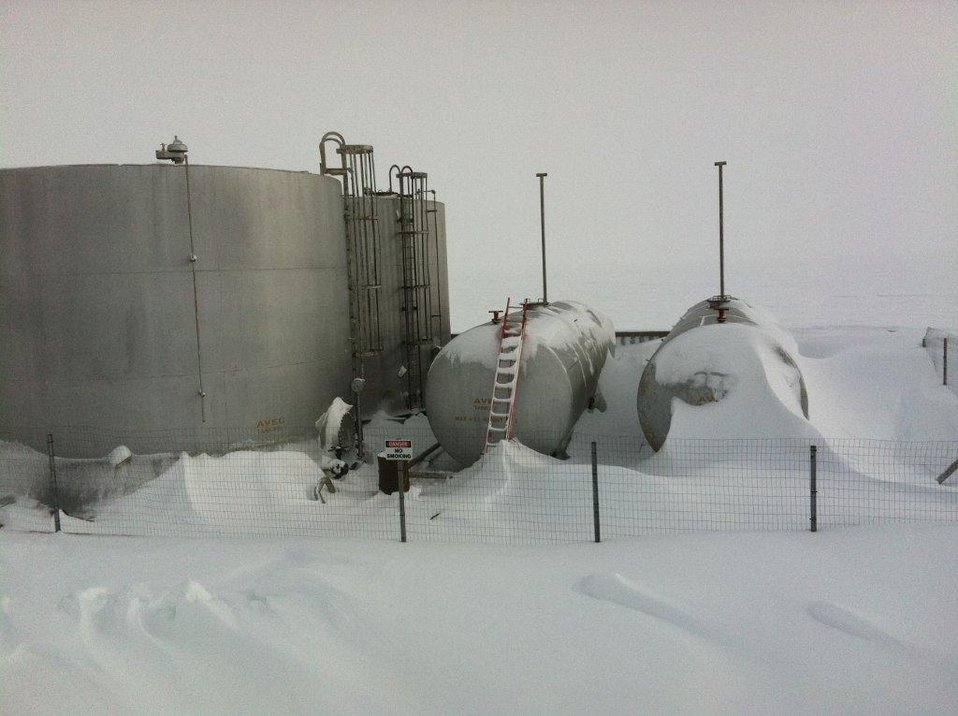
Diesel fuel bulk storage facility

The combination of the Native Village of Teller's limited fuel storage capacity and a harsh winter led to a supply shortage in 2012.